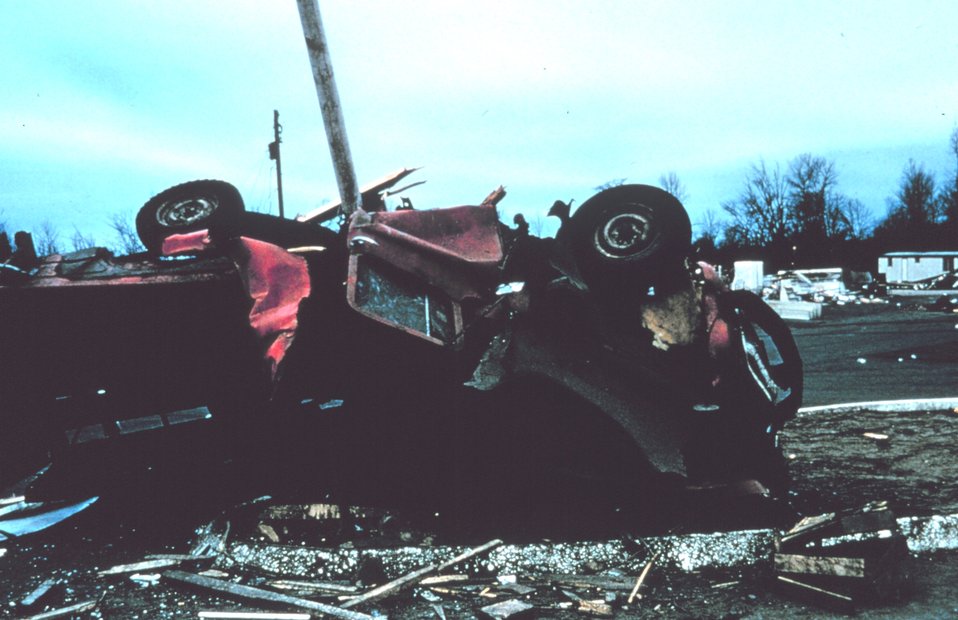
Tornado crushes and rolls farm vehicle, pinning it against a post.